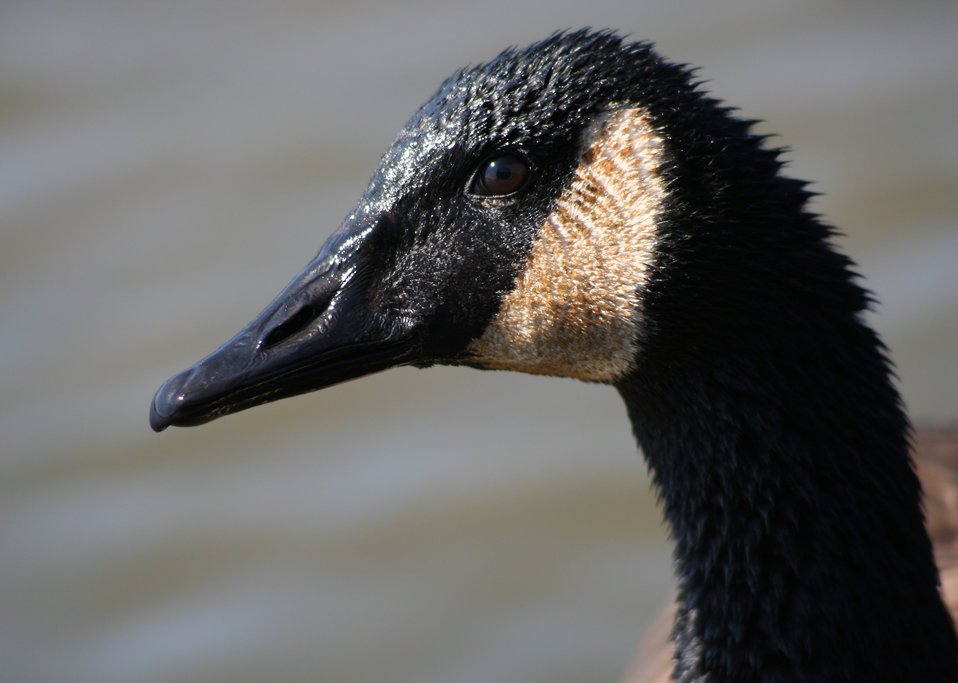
Closeup of a Canada Goose (Branta canadensis) which had just been digging underwater for food. At the Tifft Nature Preserve, Buffalo, NY.